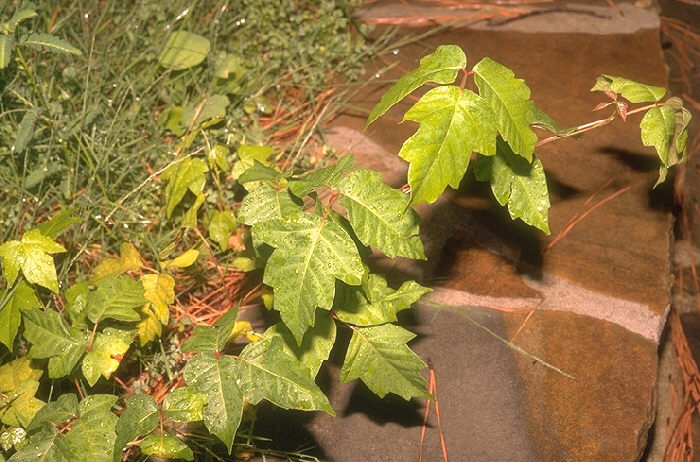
Poison ivy. Atlanta, Georgia.